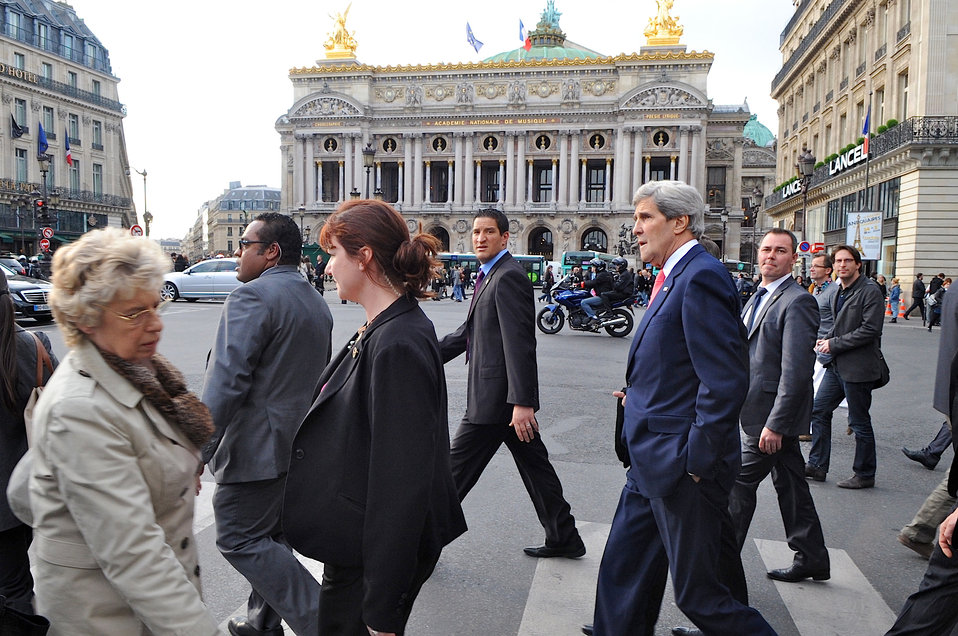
Secretary Kerry Walks in Paris

U.S. Secretary of State John Kerry walks past the Paris Opera House in Paris, France, on May 27, 2013.